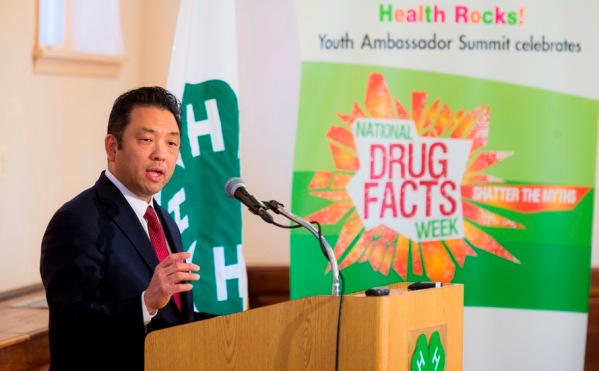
National 4-H Council Celebrates National Drug Facts Week, Launches New Healthy Living App

The event was opened by Lisa Lauxman, division director of Youth and 4-H at the National Institute of Food and Agriculture, USDA, and Council's Chief Strategy Officer Andy Ferrin. After opening remarks and introductions, keynote speaker David Mineta, White House Deputy Director of Demand Reduction for the Office of National Drug Control Policy, took the podium.